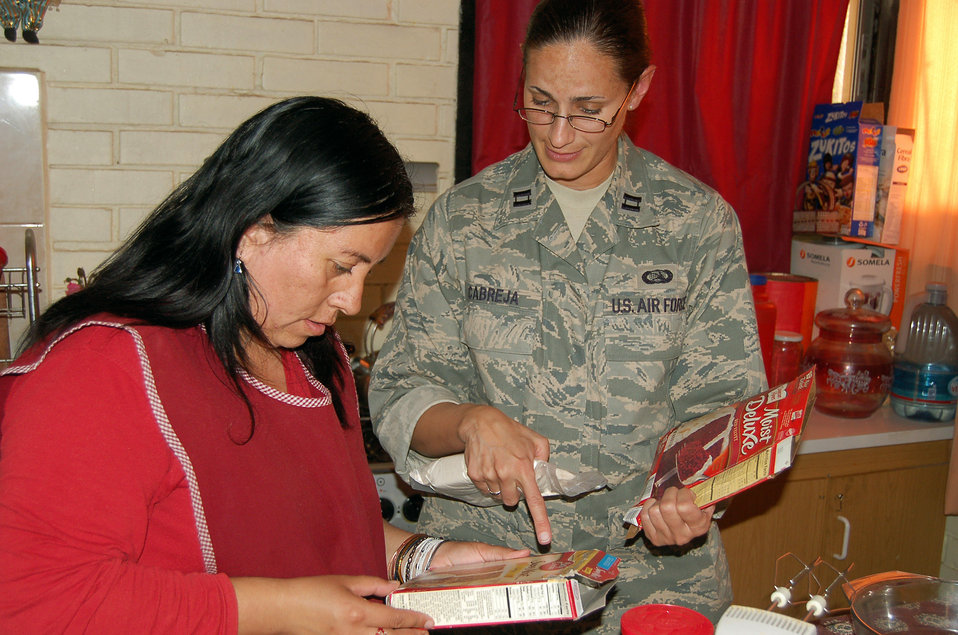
Airmen spend day with Chilean children

Capt. Anabelle Cabreja translates the directions for baking a cake into Spanish for a housemother Oct. 30 at a home for abused or neglected children near Santiago, Chile. Captain Cabreja is assigned to 12th Air Force at Davis Monthan Air Force Base, Ariz.